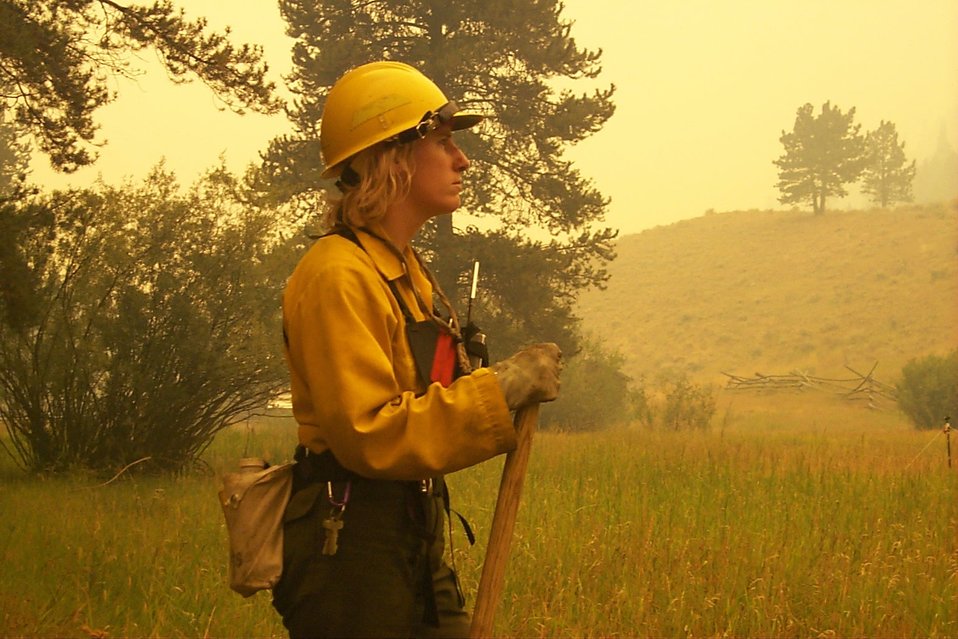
Fire fighter Fire Clearwater Fire Salmon Field Office USRD Upper Snake River District